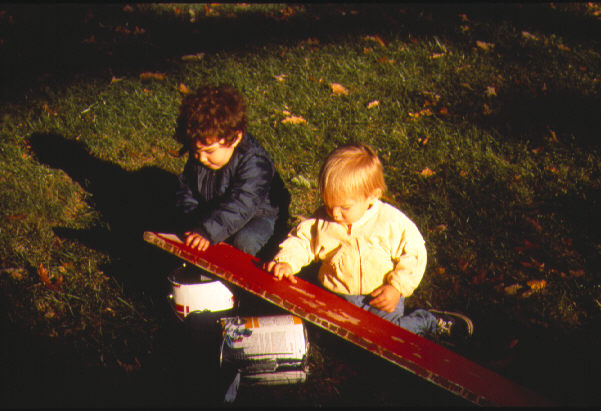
Child Hazards